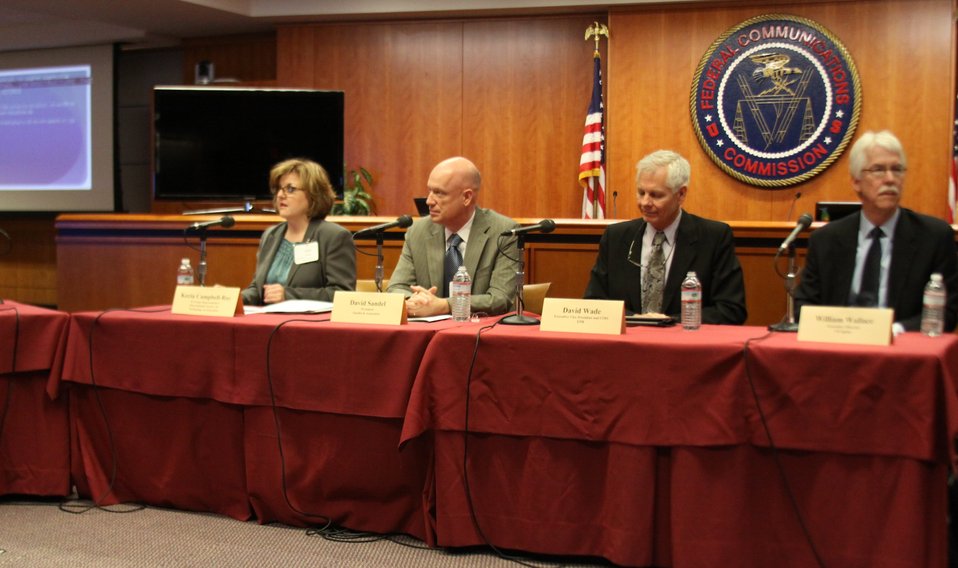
March 27, 2013 Gigabit City Challenge: Broadband Networks Workshop Panel 1: What Communities Can Do With A Gigabit